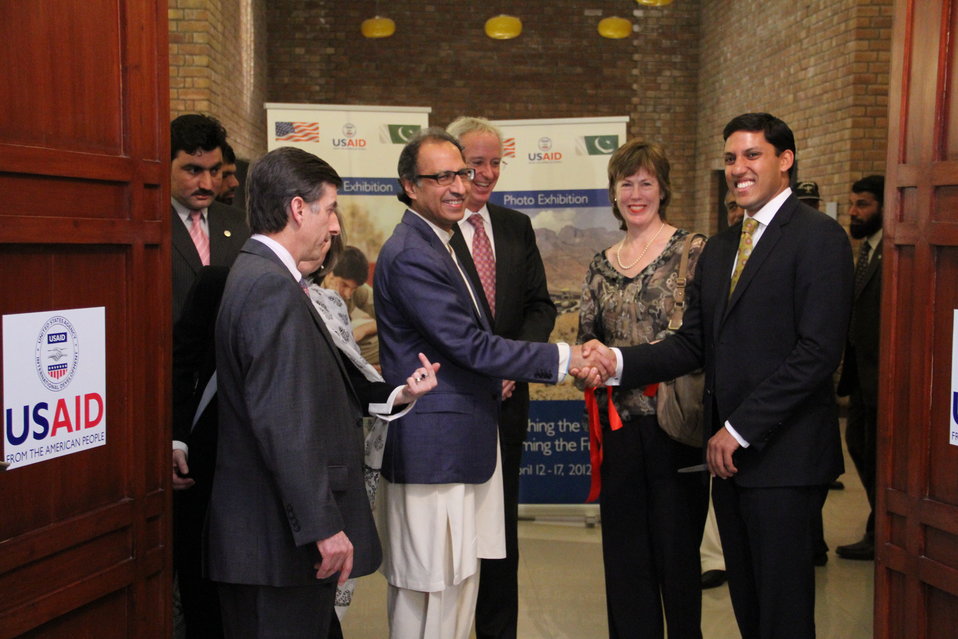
Photo Exhibition Celebrate US-PAK Cooperation at PNCA, Islamabad on April 13, 2012

Federal Minister for Finance Dr. Abdul Hafeez Sheikh, Dr. Rajiv Shah, Administrator of the USAID, and US Ambassador Cameron Munter inaugurating the photo exhibition celebrating more than six decades cooperation between the United Stated and Pakistan.